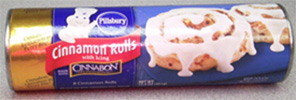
RECALLED – Pillsbury Cinnamon Rolls with Icing

September 6, 2013 – Product Recall –
General Mills Announces Voluntary Recall of Limited Quantity of Refrigerated Pillsbury Cinnamon Rolls With Icing.